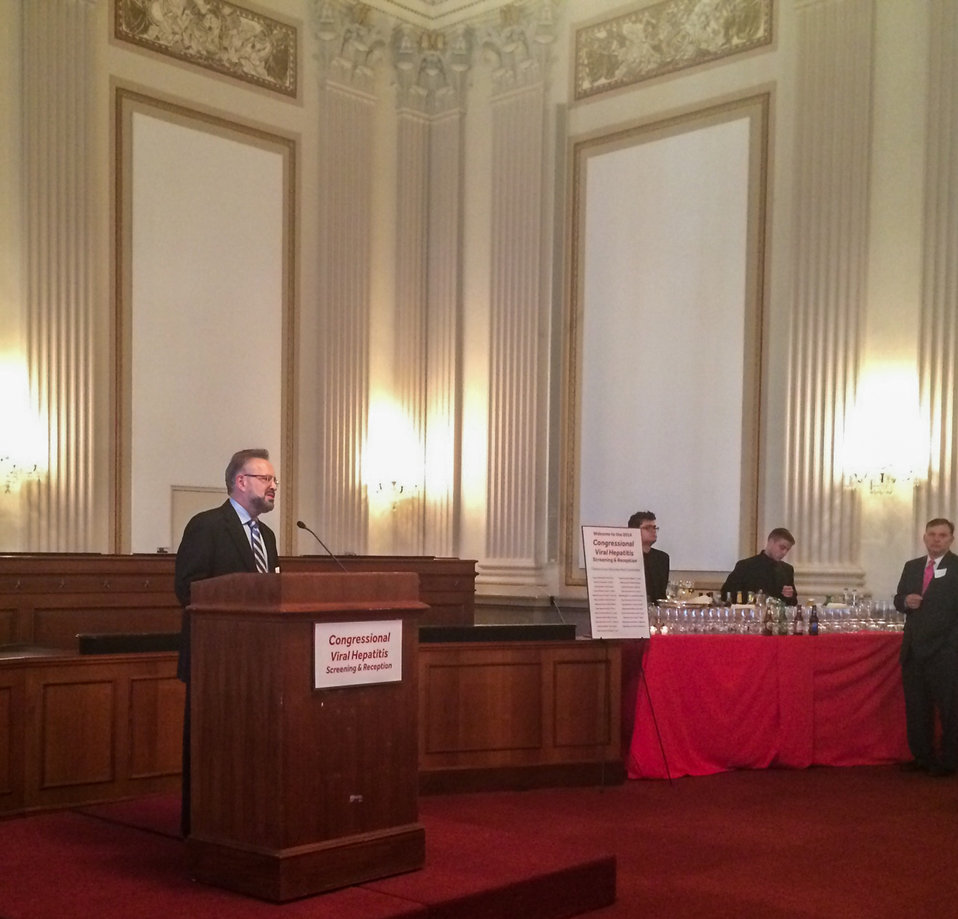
14 0519 HepTestingDay-3